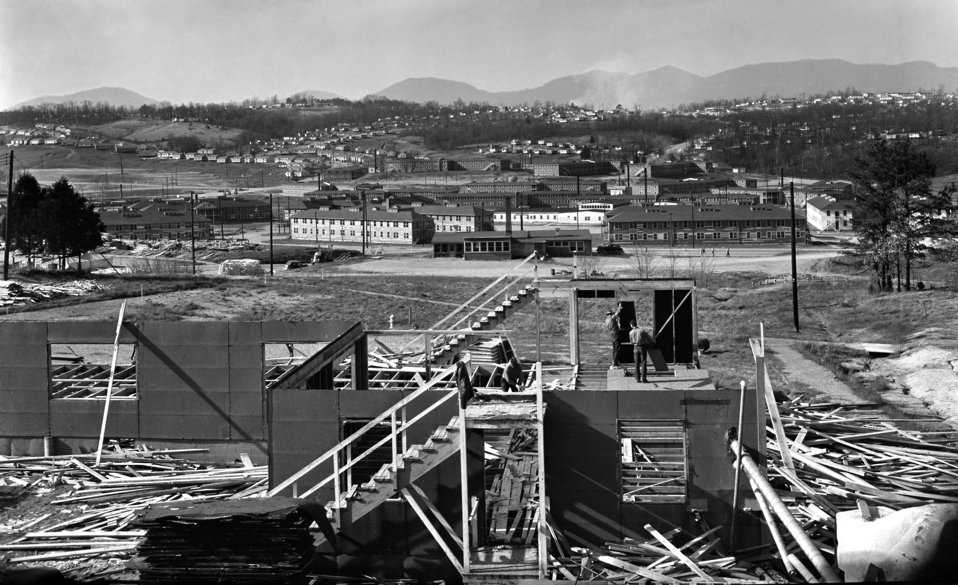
Dormitory 'S' Type Washington Group Being Removed Oak Ridge 1948

4326 DOE photo Ed Westcott 2-18-1948 Oak Ridge Tennessee Being removed by Starr Lumber Company Data: 5 x 7 Panchro Press Type B Harrison Filter, f 4.5 , 1/15 sec. , Light: Weston 400 minus one.